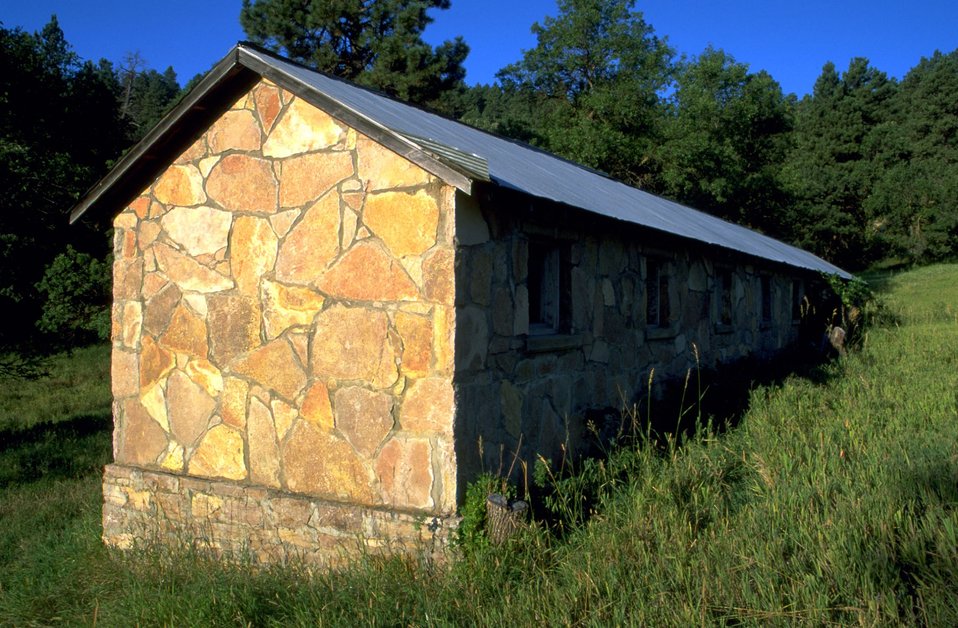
One end of the long, stone Building at south end of Fort Meade